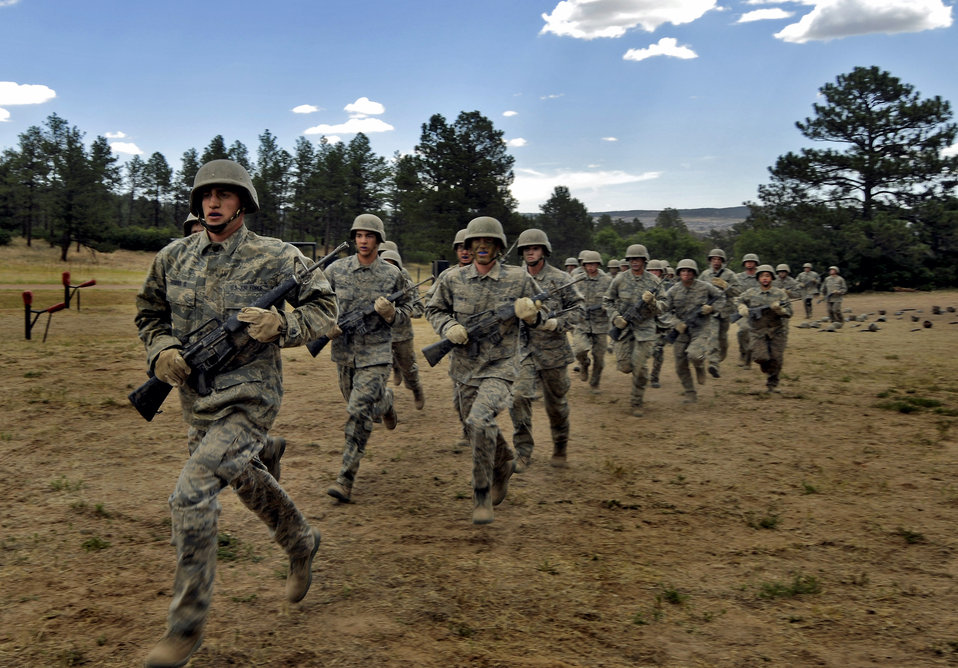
Assault course

U.S. Air Force Academy basic cadets prepare to attack the assault course during basic cadet training in the Jacks Valley training area July 25.